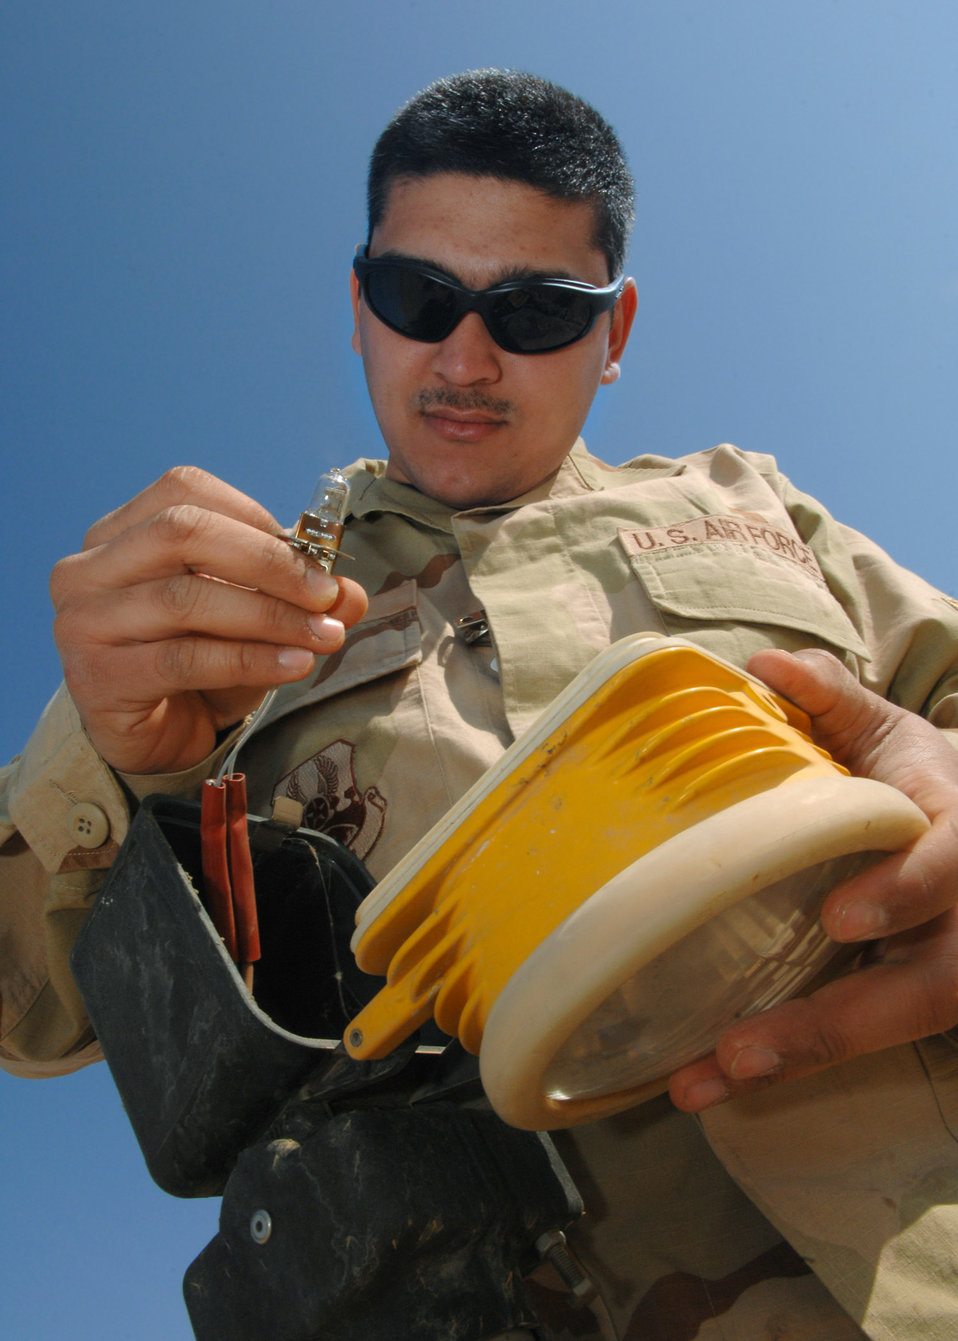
Lighting the way

Airman Nicholas Wengerd changes out an approach light Feb. 28 at Balad Air Base, Iraq. The approach lights help to illuminate the runway during nighttime landing operations. Airman Wengerd, a 332nd Expeditionary Civil Engineer Squadron electrician, is deployed from Ellsworth Air Force Base, S.D.